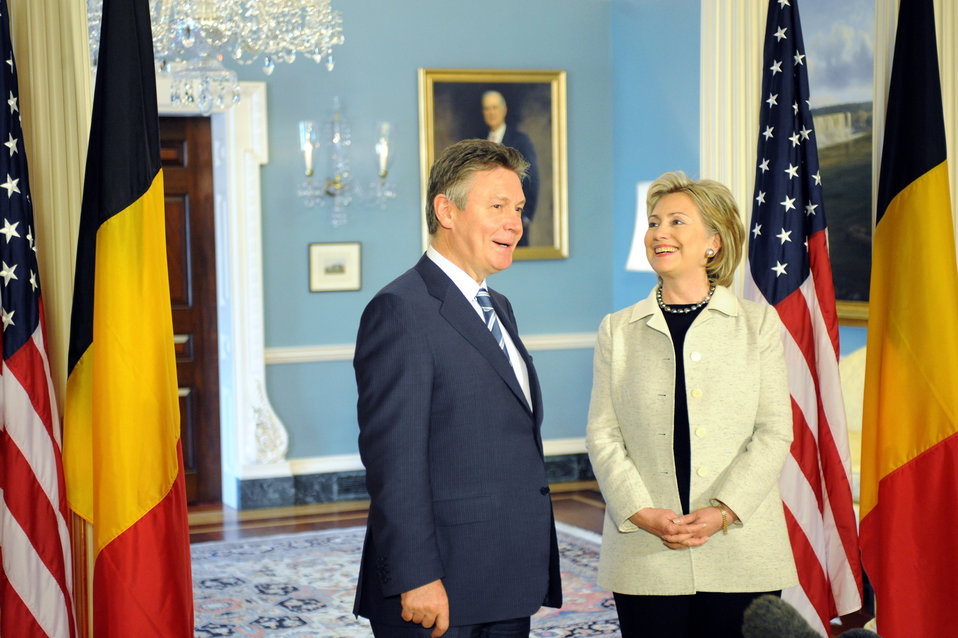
Secretary Clinton Meets With Belgian Prime Minister

U.S. Secretary of State Hillary Rodham Clinton hosts a bilateral meeting with Belgian Deputy Prime Minister Karel De Gucht in the Treaty Room of the U.S. Department of State in Washington, DC May 22, 2009.